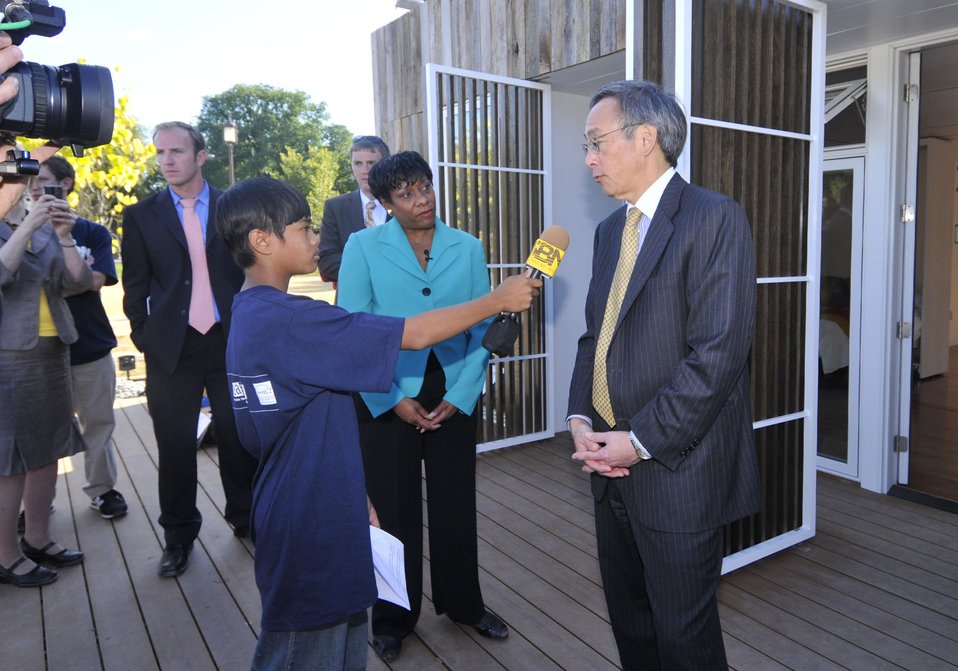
Solar Decathlon 2009 on the National Mall, with Sec. Chu

Solar Decathlon 09